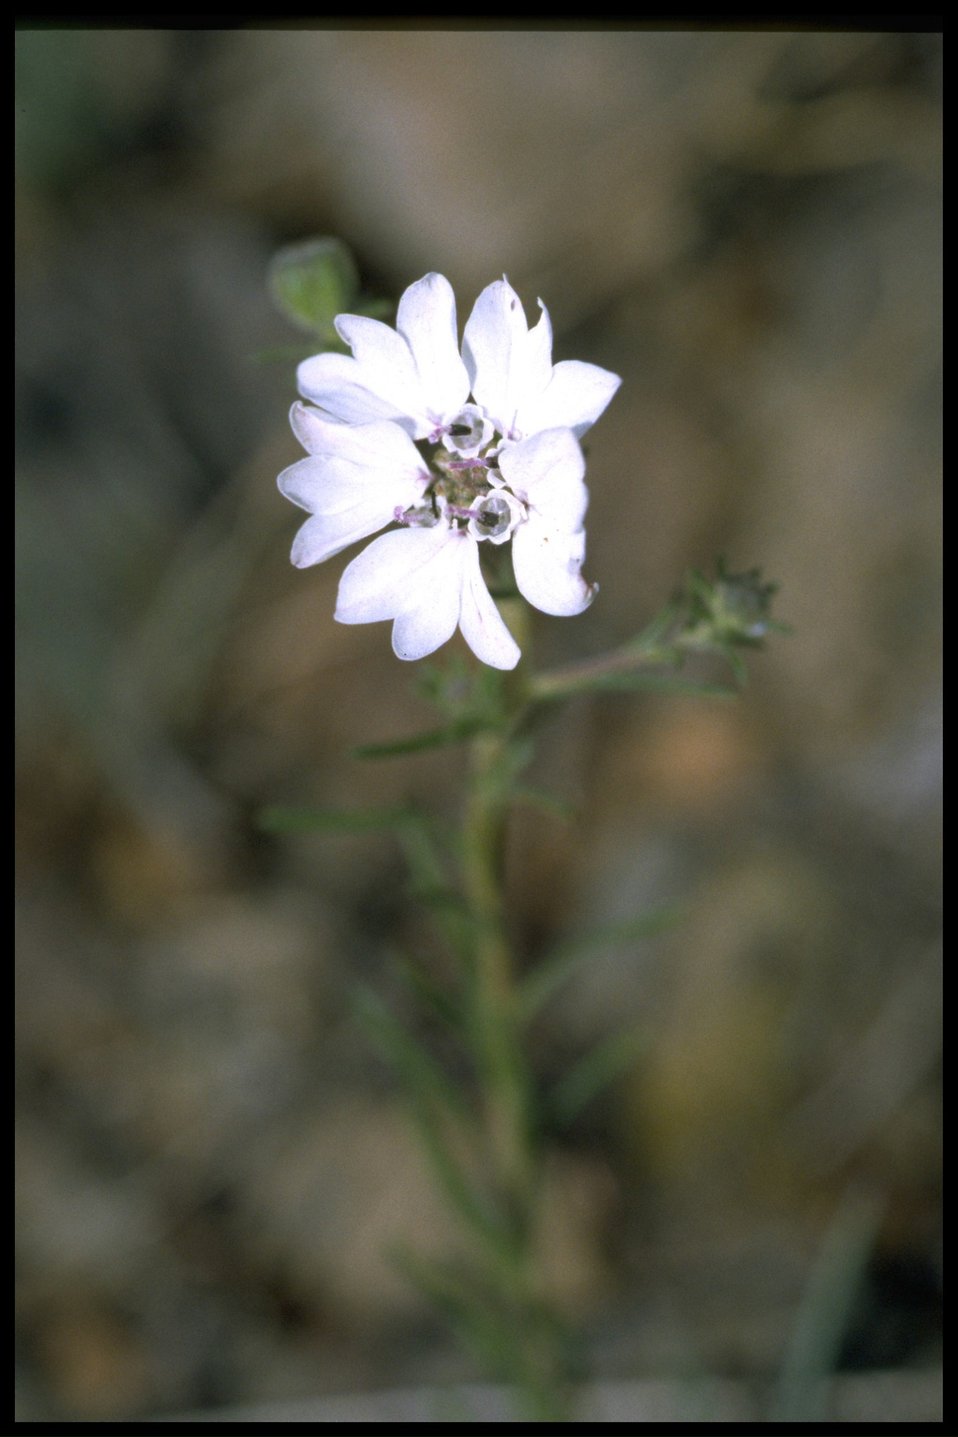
Close up of Belepharipappus wildflower.